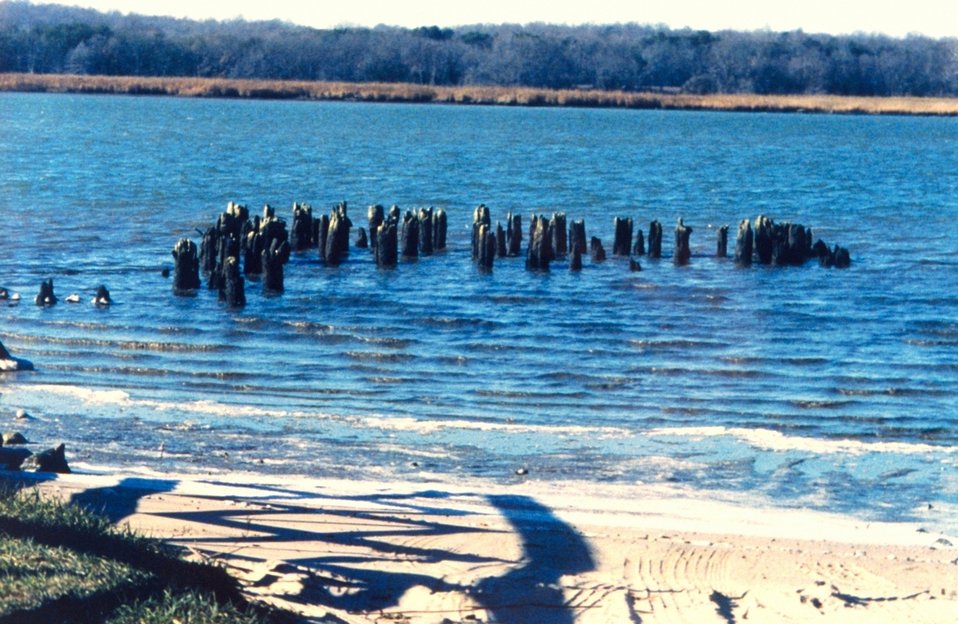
Pier pilings from the old Holland Cliffs Steamboat landing along the Patuxent River.